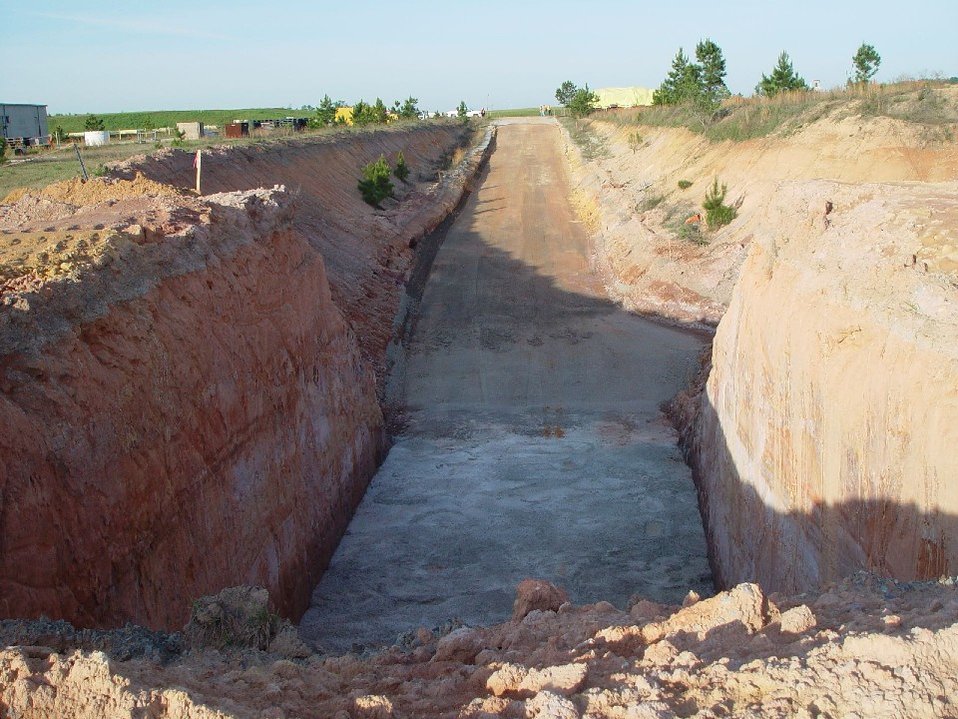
HWCTR PV Disposal, 4-14-11

Recovery Act workers removed the Heavy Water Components Test Reactor vessel and permanently disposed it onsite.